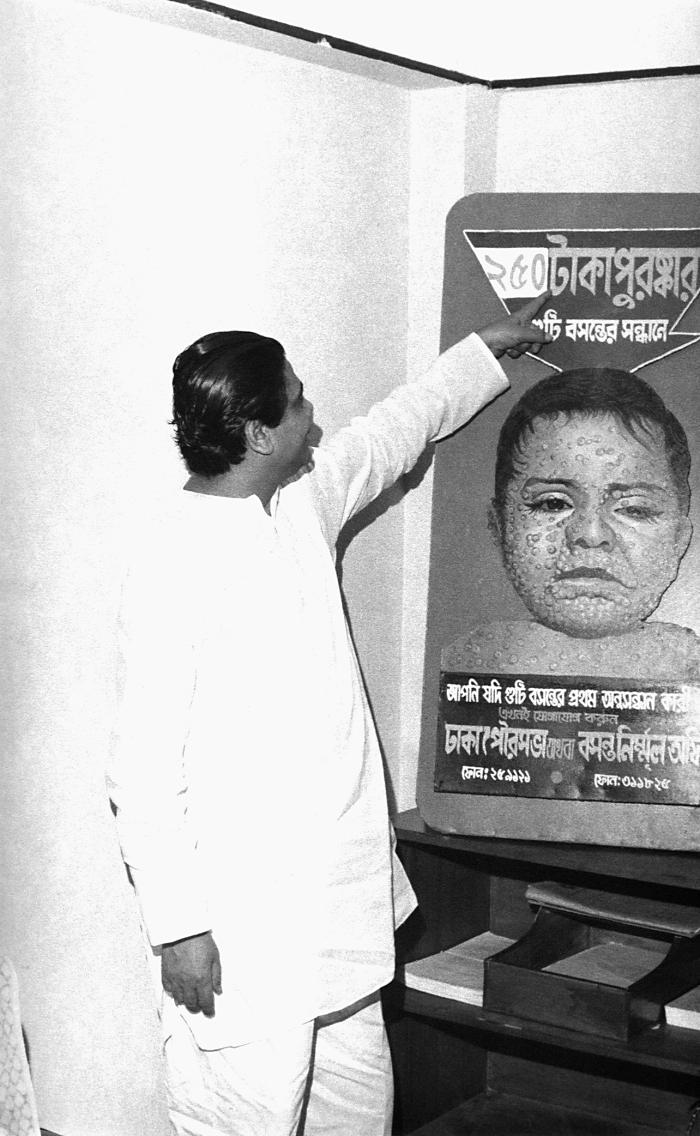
Though his name is unknown, this 1975 photograph depicted one of the Bangladesh Secretaries of Health, as he was standing in front of one of the posters informing viewers of the 250 Taka reward paid to those who'd reported a confirmed case of smallpox to the local eradication team public health authorities. Early on during the eradication campaign, the reward was 50 Taka, but as the campaign turned up fewer, and fewer cases, the reward grew to 250 Taka.The Taka is the official currency of Bangladesh, and is produced in 8 different denominations. The last known case of naturally occurring smallpox, a young girl named Rahima Banu, was reported by an 8 year old girl, who was paid her 250 Taka reward. All rewards were handed out in a public place.